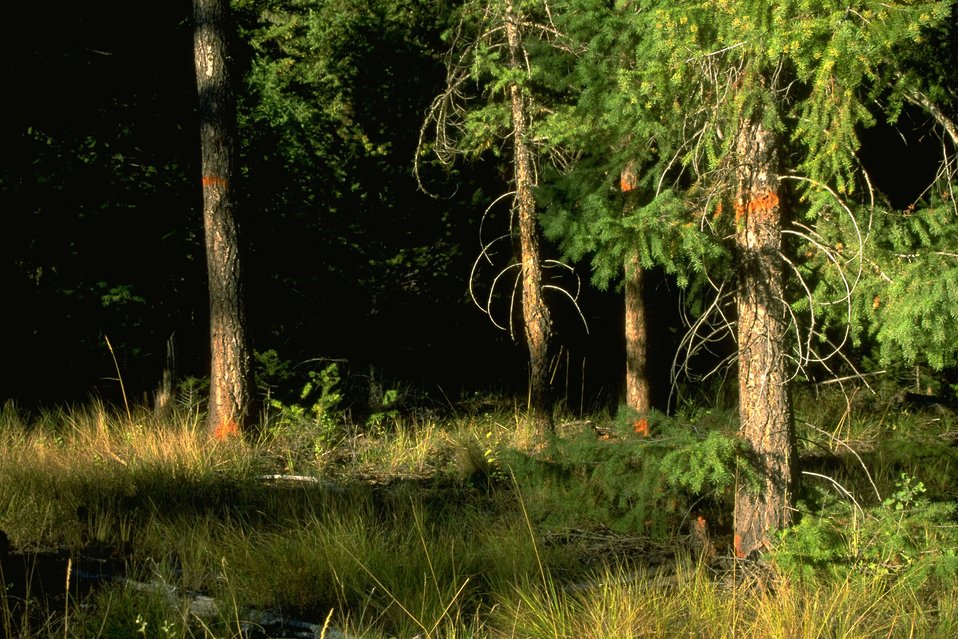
Fir trees marked for harvest to help restore old growth pine along the Blackfoot River